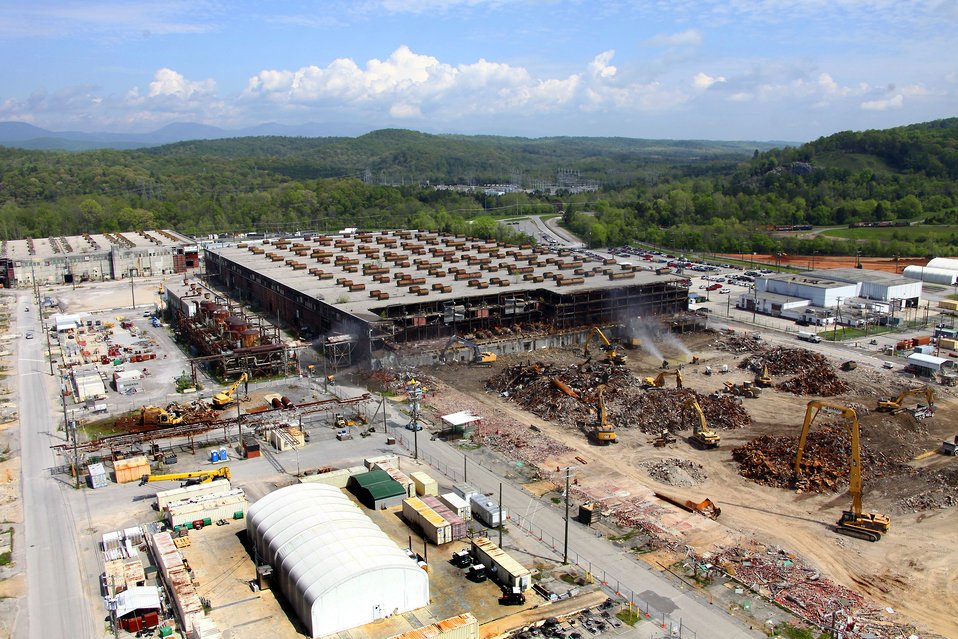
Demolition Progress at Oak Ridge